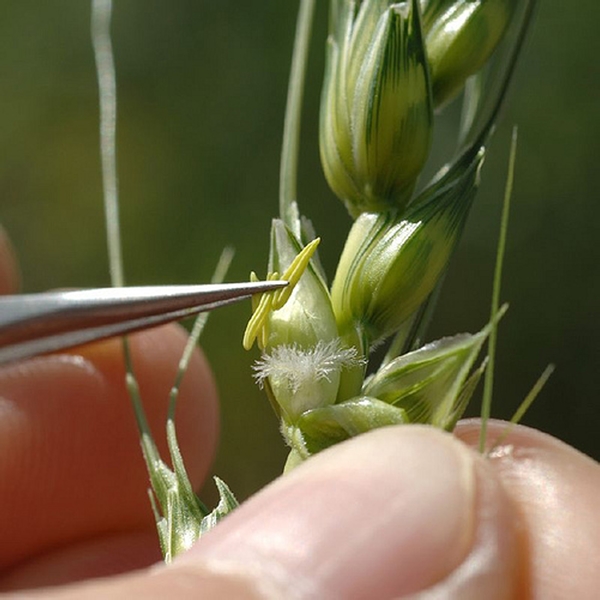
m 01 (3)